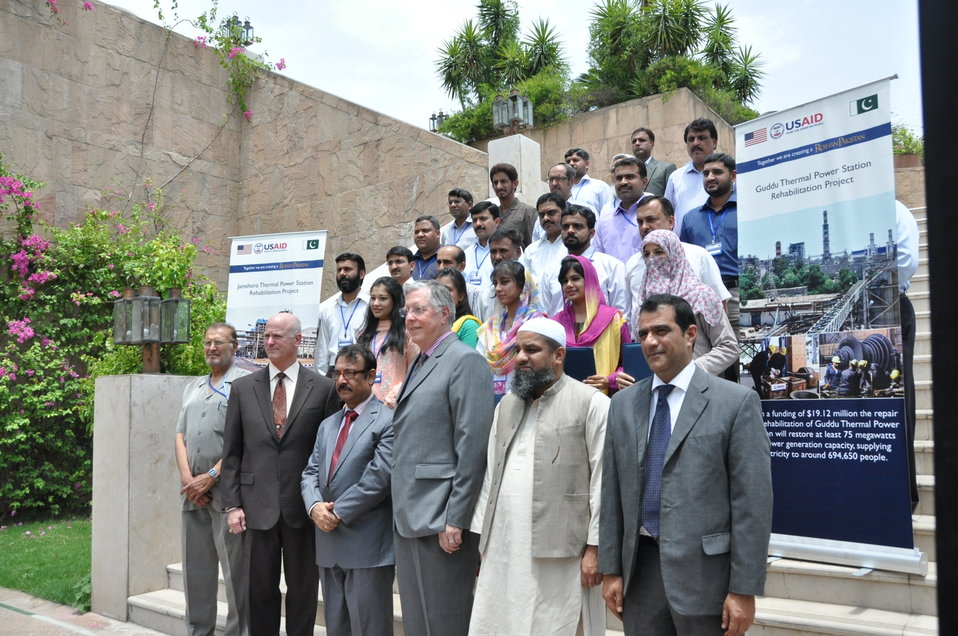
U.S. TRAINING IMPROVES POWER PLANT ENGINEERS’ EFFICIENCY

Caption : Group photo of Deputy Director of USAID’s Energy Office Tim Moore with twenty Pakistani engineers, from power generation companies.